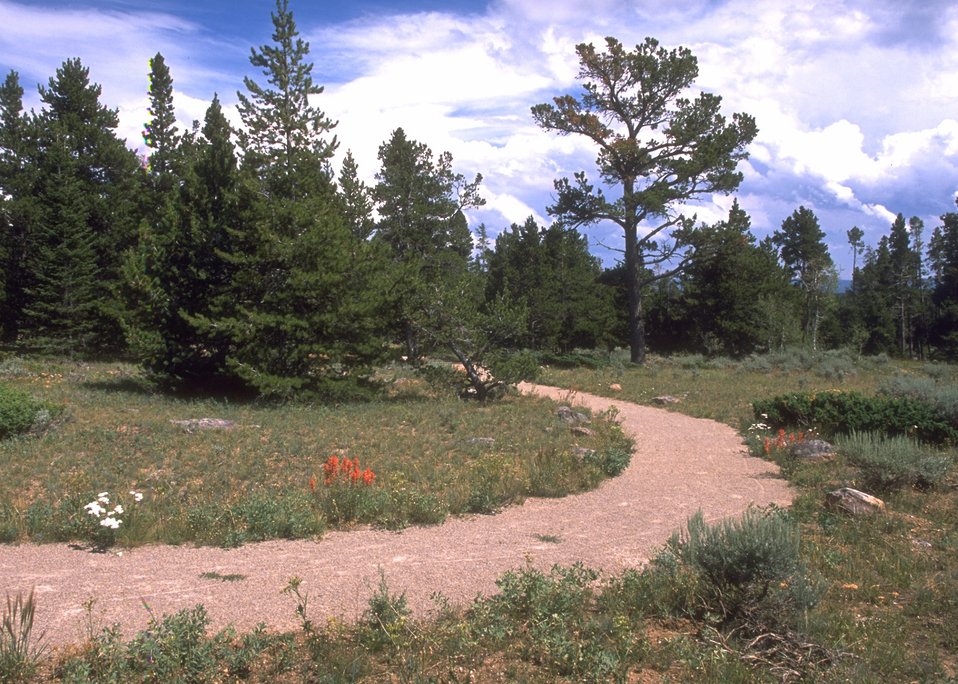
Interpretive trail in Muddy Mountain Recreation Area, Casper Field Office.